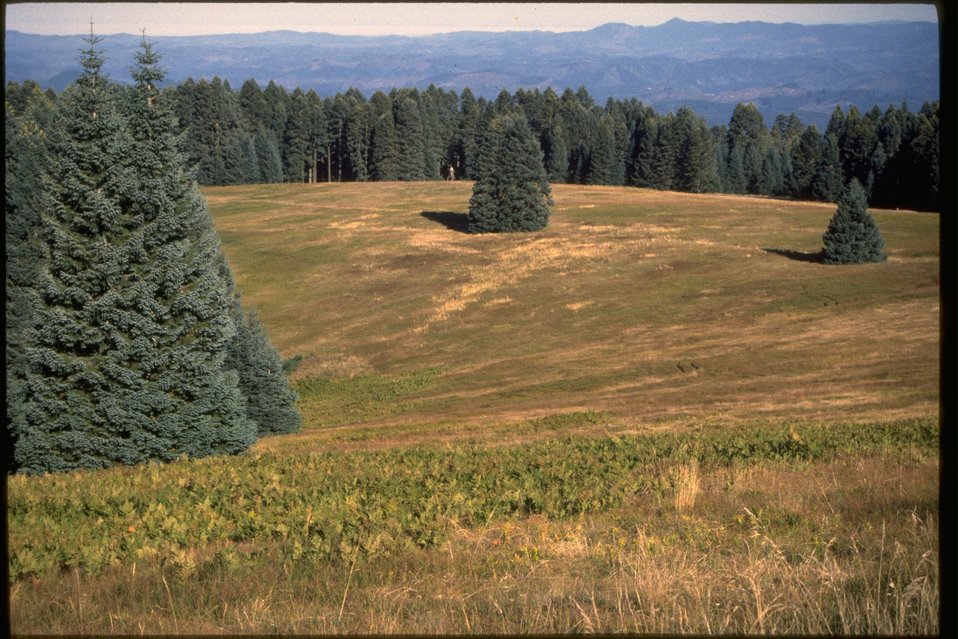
Research Natural Area. View from Mary's Peak.